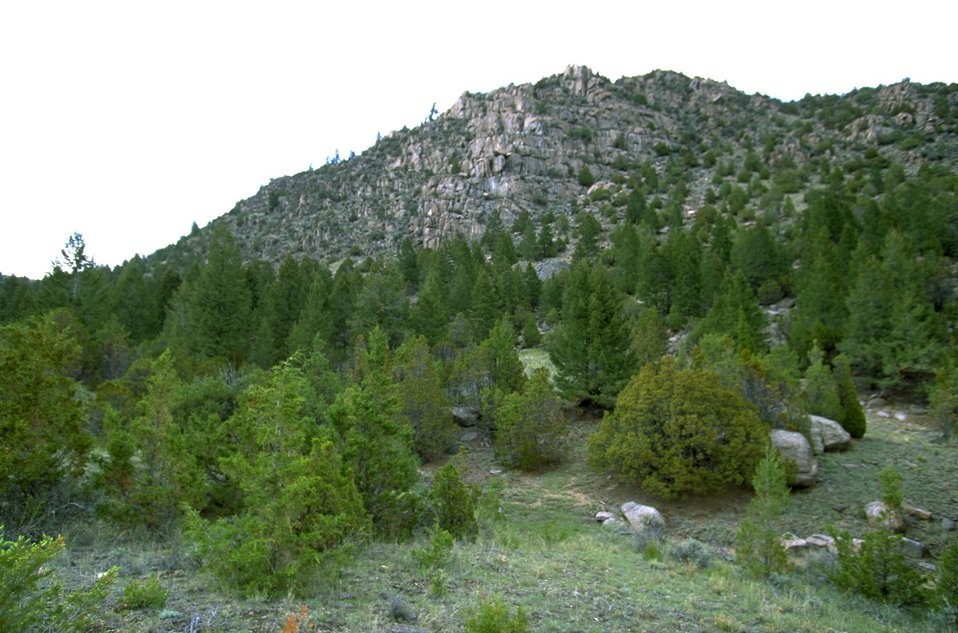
Rocky hillside